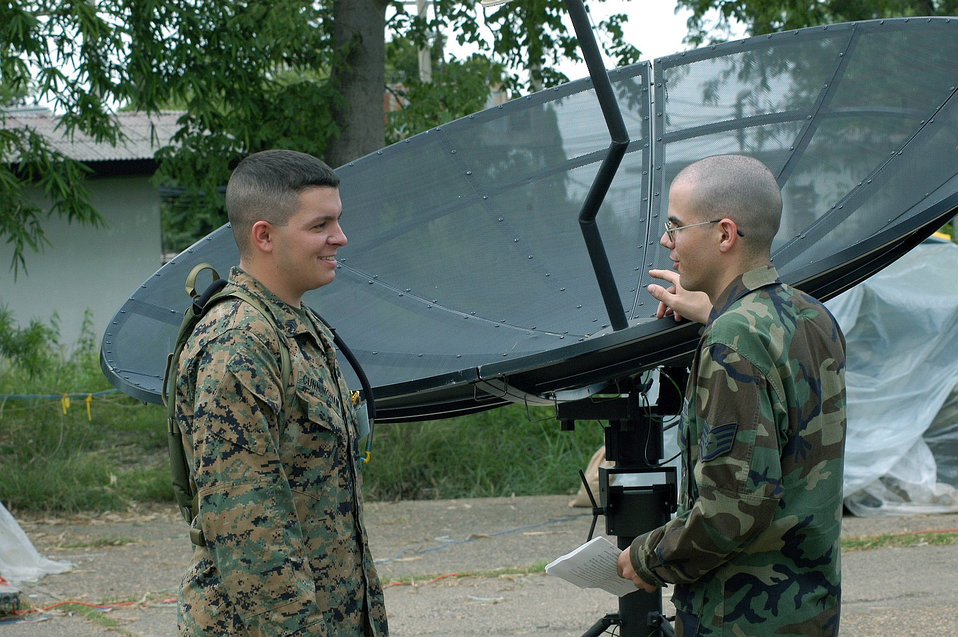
Predicting the weather

UDORN THANI, Thailand -- Marine Corps Sgt. Ryan Cunningham (left) and Staff Sgt. Michael Rudd will use a satellite receiver to provide a timely and accurate weather picture for crews aboard MC-130s, F/A-18s, KC-135 Stratotankers and C-12s during Cobra Gold 04. They are part of a multinational, multiservice team of weather forecasters here. Cobra Gold is an exercise designed to improve U.S., Thai, Singaporean, Mongolian and Filipino combined readiness and interoperability, enhance security relationships and demonstrate U.S. resolve in the region. Sergeant Cunningham is assigned to the Marine Wing Support Squadron 171 at Iwakuni, Japan. Sergeant Rudd is assigned to the 353rd Operations Support Squadron at Kadena Air Base, Japan.